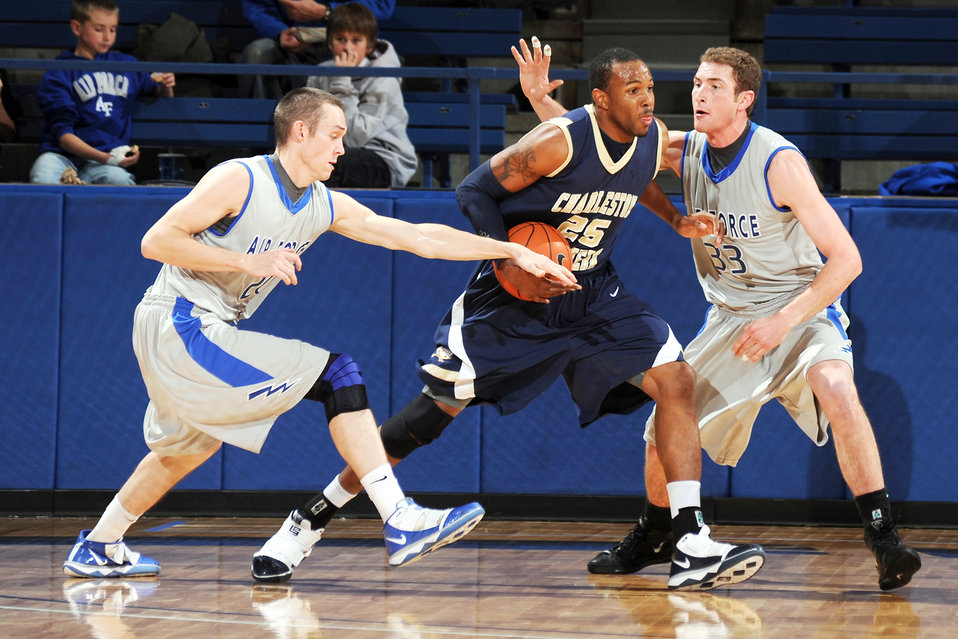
Air Force Academy

Falcons junior Tom Fow and senior Mike McLain pressure Charleston Southern forward Kenny Mitchell in Air Force?s 68-58 victory over the Bucs Nov. 28, 2009. Fow had 13 points and six rebounds, while McLain accounted for seven points and four rebounds.